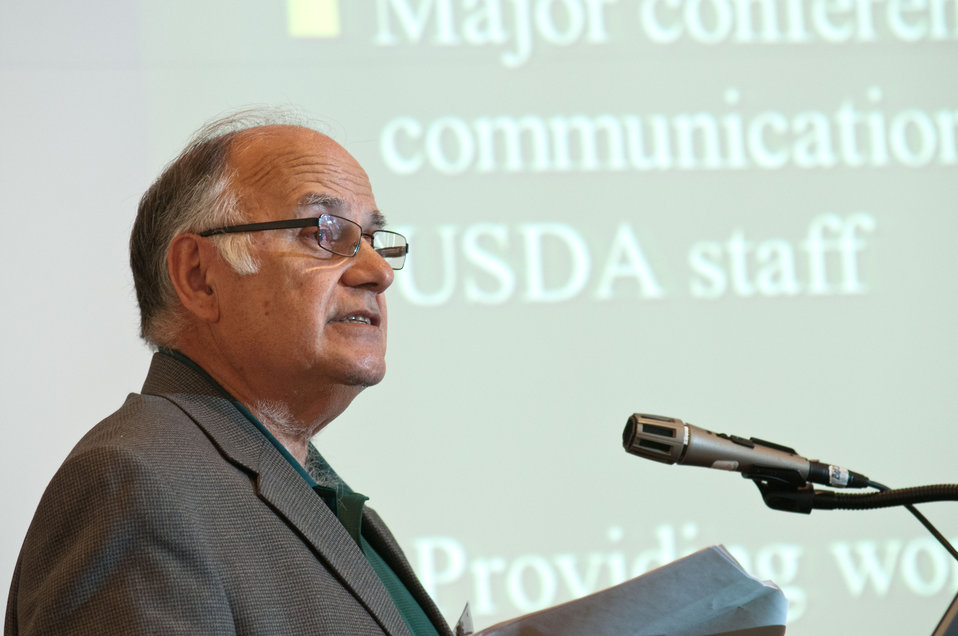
Texas/Mexico Border Coalition Chairman Omar Garza speaks about Identification of the Risks Faced By, the Needs of, and the Role of Non-governmental Organizations (NGOs) to Small and Disadvantaged FarmersFarmers, during the U.S. Department of Agriculture (USDA) 2013 Agricultural Outlook Forum held at the Crystal Gateway Marriott Hotel in Arlington, VA on Friday, Feb. 22, 2013. The breakout session’s general topic is Risk Management for Small and Socially Disadvantaged Farmers provides a profile of small and disadvantaged farmers based on information from the recent Census of Agriculture in order to identify the size and current economic and demographic trends of these farmers. The discussion also identified the risks for these farmers, the need to manage those risks for longer-term viability/sustainability, the role of the public sector, and the resources available for small and disadvantaged farmers in coping with risk.